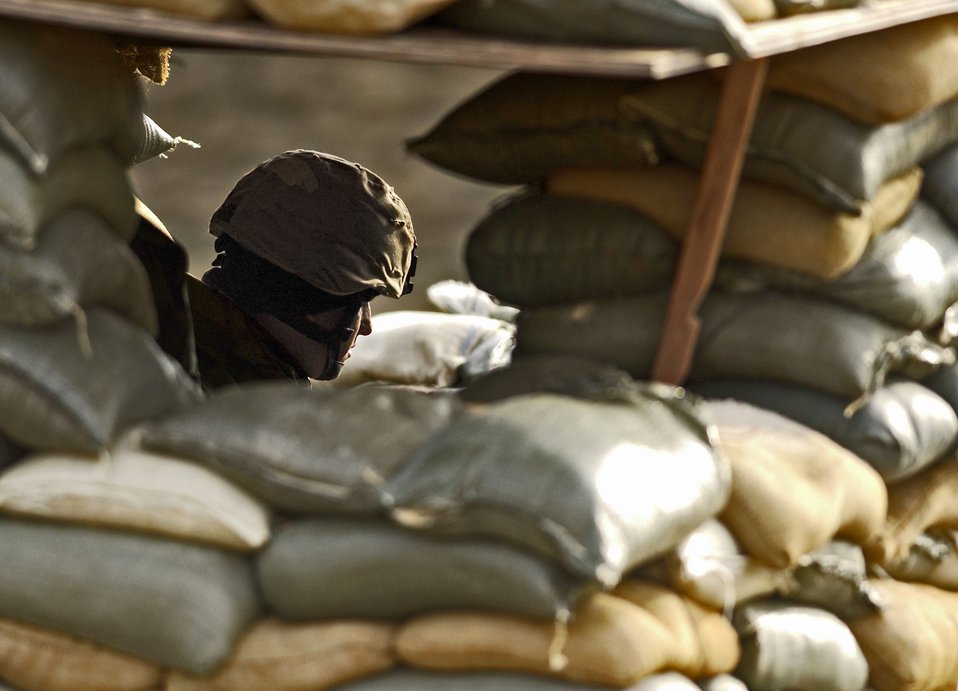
Wing assesses combat ability

LANGLEY AIR FORCE BASE, Va. -- An Airman with the 1st Fighter Wing takes cover during a Phase II operational readiness inspection here Jan. 11. The inspection will evaluate the wing's ability to prepare and deploy personnel, equipment, and support assets to a combat environment.